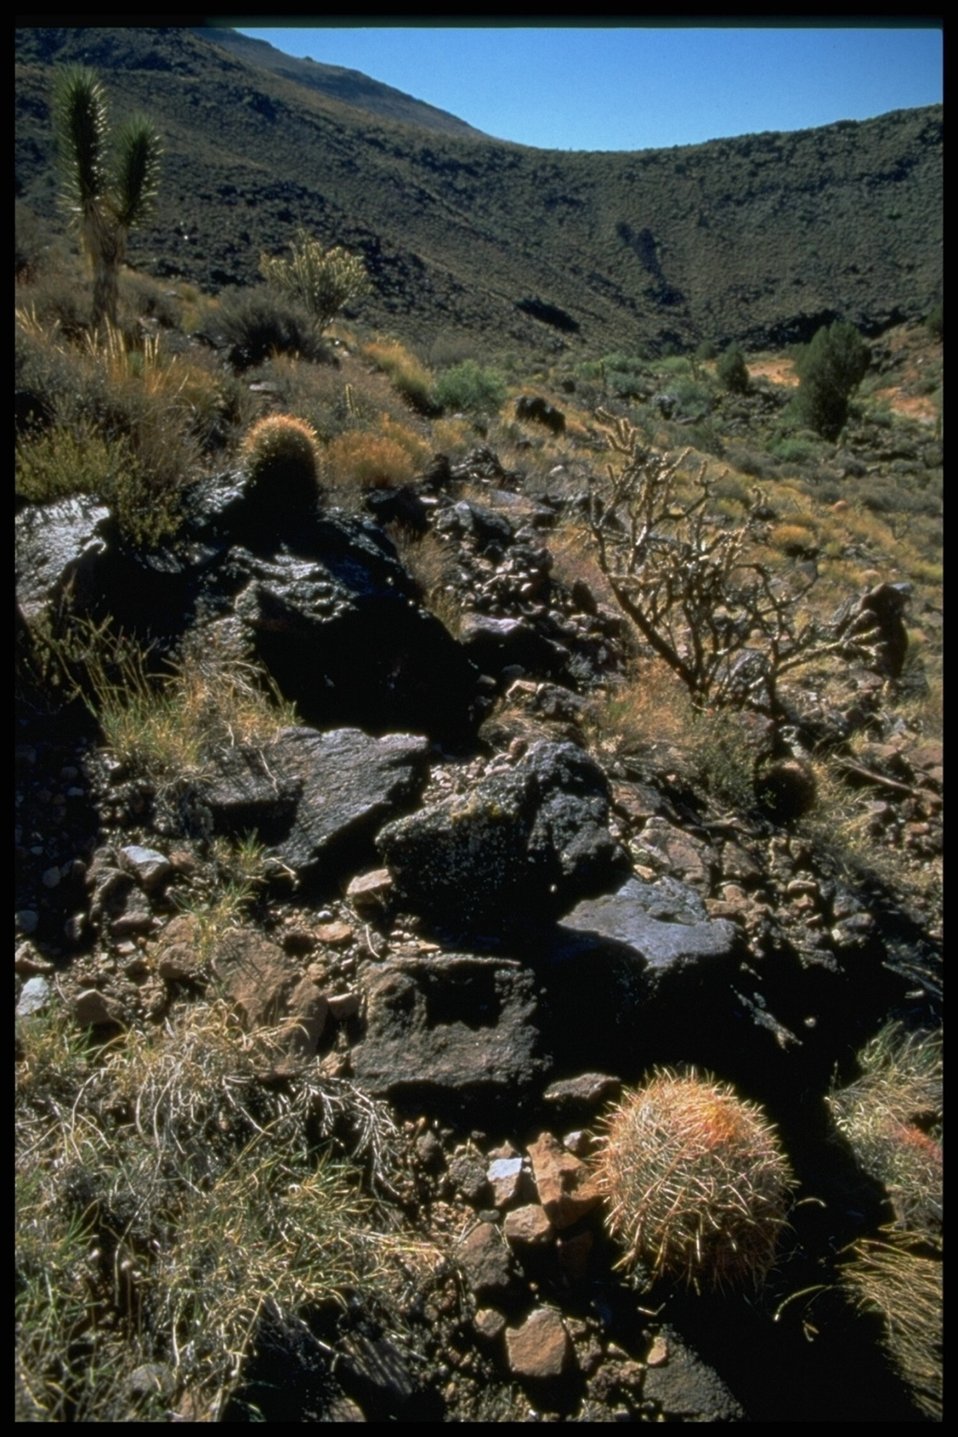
Rocks, Cacti, and desert plants pepper the side of this mountian in the Grand Canyon-Parashant National Monument.